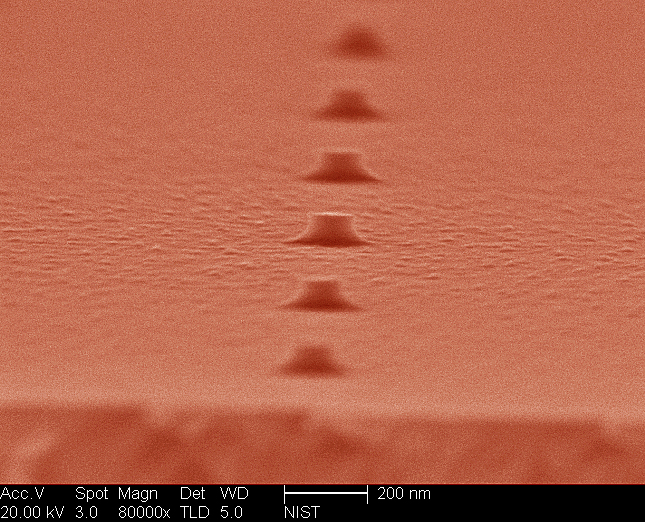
Quantum Dots

Colorized micrograph of quantum dots made using electron beam lithography and etching. This type of quantum dot can be shaped and positioned more reliably than dots made with conventional crystal growth methods.